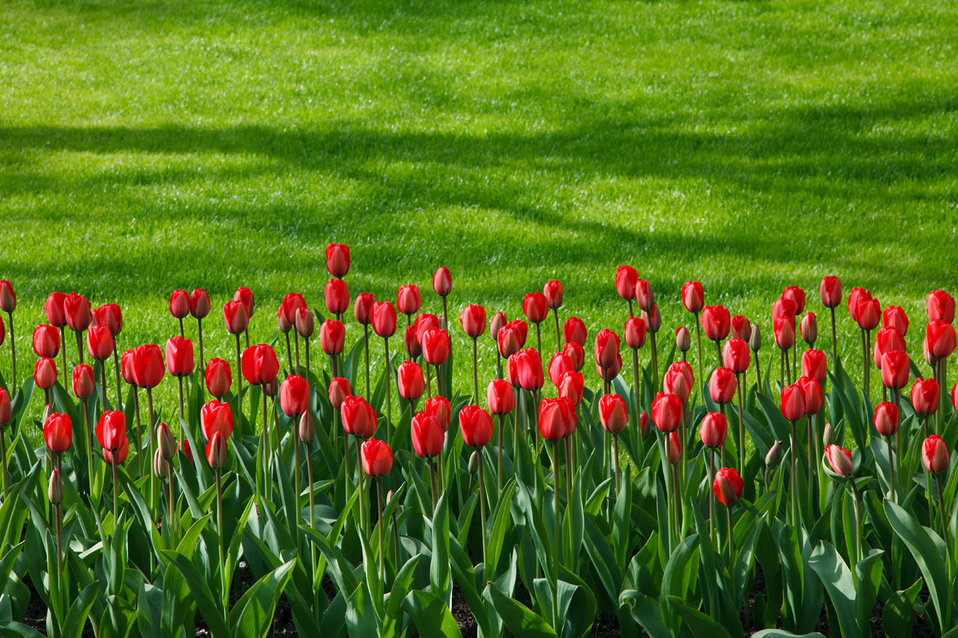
Red tulip row

Line of red tulips with green grass background.